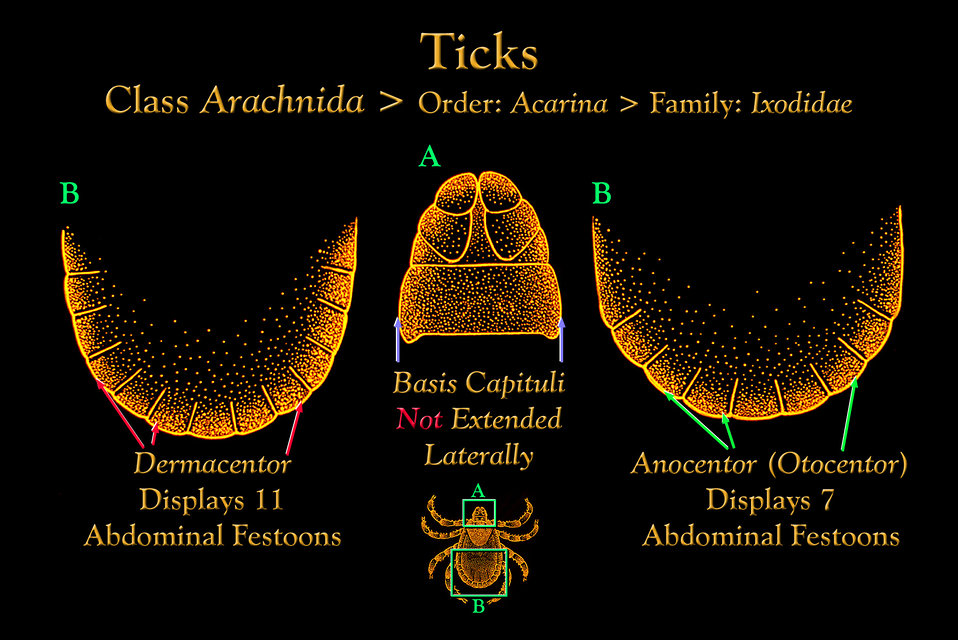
This illustration depicts the festoons found on the abdomen of Dermacentor and Anocentor Ixodidae hard ticks.